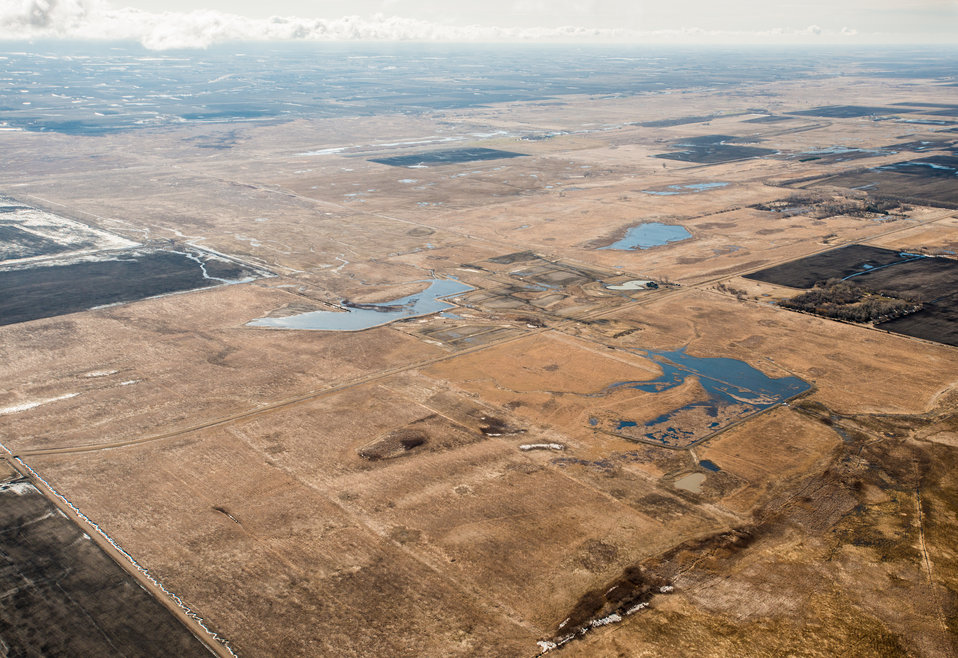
Ehlert North U.S. Department of Agriculture (USDA) Natural Resources Conservation Service (NRCS) Wetland Reserve Program (WRP) in Wilkin County, MN, on Tuesday, April 30, 2013. For information about this and other programs from the USDA Red River Basin Initiative (RRBI) please see www.mn.nrcs.usda.gov/news/features13/RRBI.html.